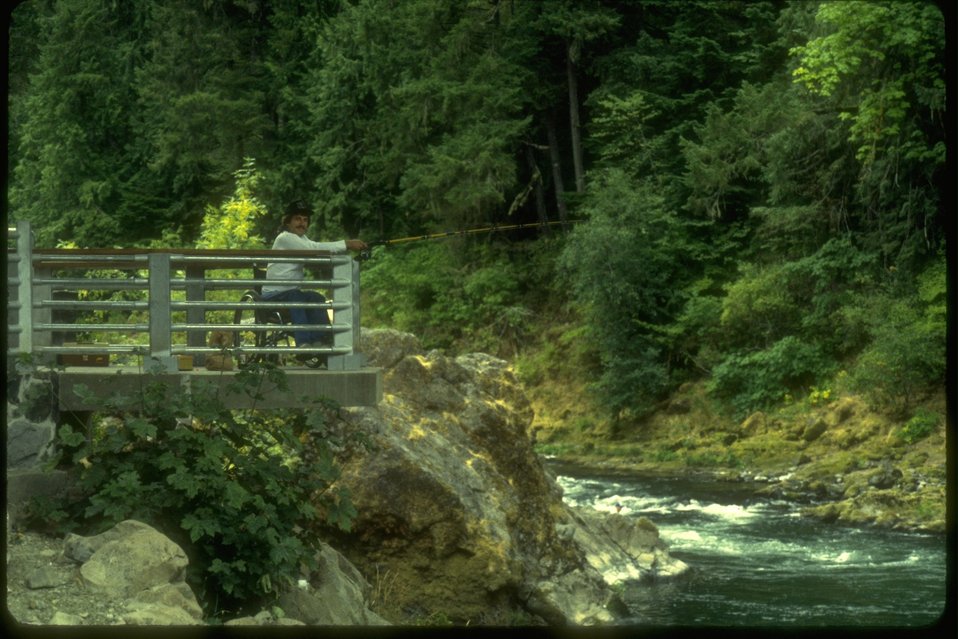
Picture of the Disabled Fishing Platform.